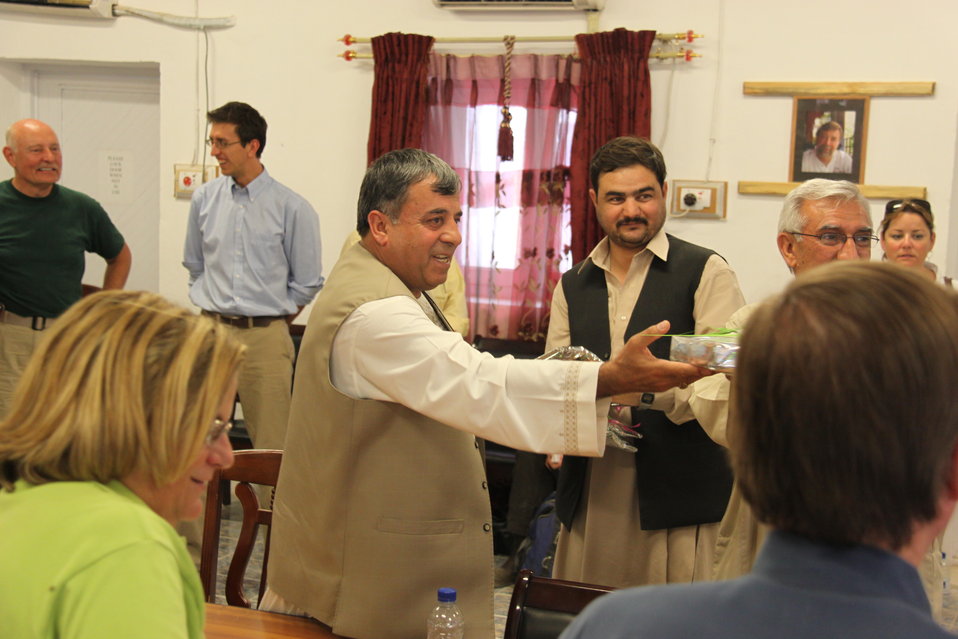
Meeting with Local Leaders in Kandahar